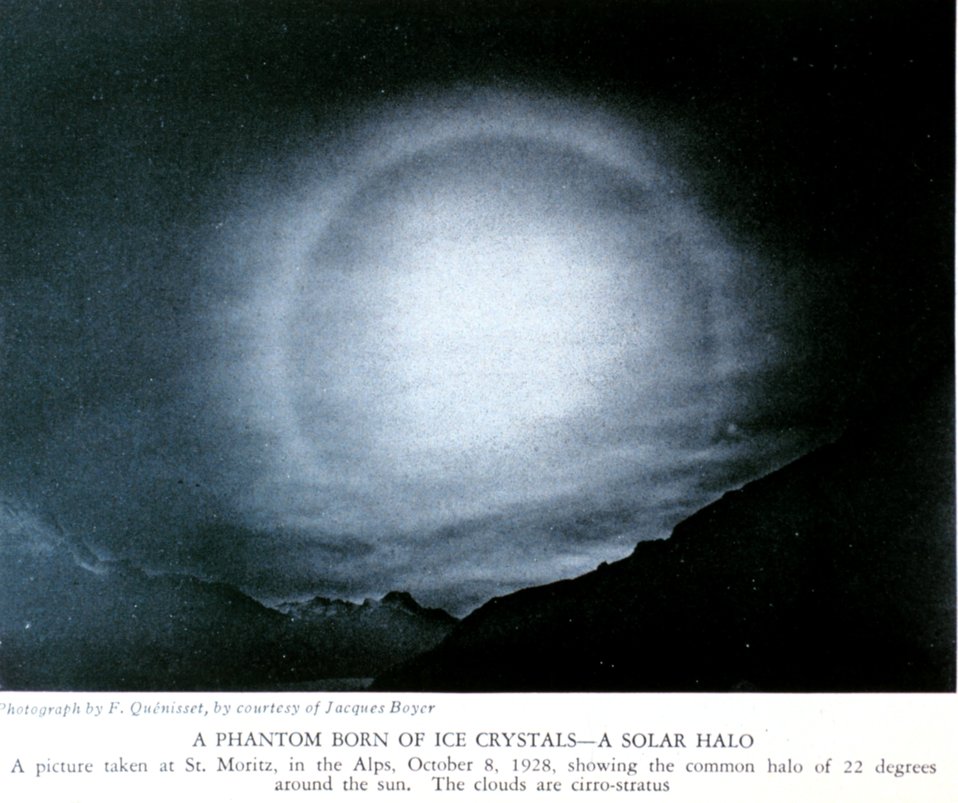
'A Phantom Born of Ice Crystals - A Solar Halo.' A picture taken at St. Moritz, in the Alps, October 8, 1928, showing the common halo of 22 degrees around the sun. the clouds are cirro-stratus. In: 'A Book about the Weather' by Charles F. Talman, 1931. P. 18. Library Call Number M T151b.